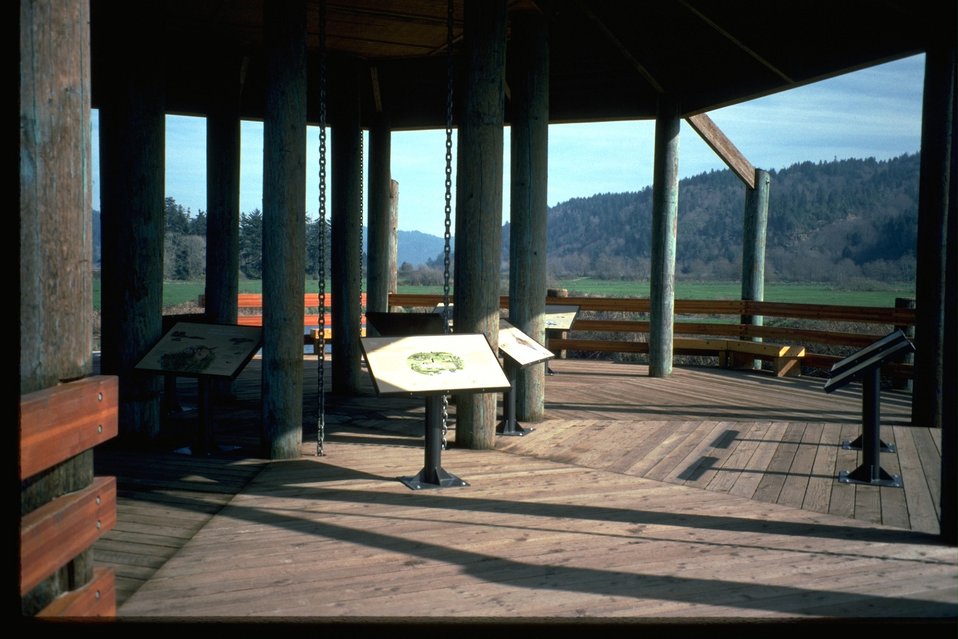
Kiosk panels at the Dean Crek viewing platform.